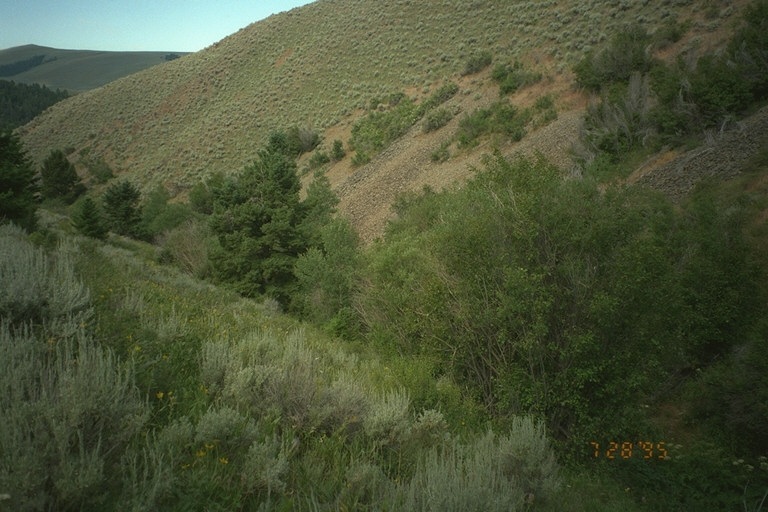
Riparian area Public Lands Salmon Field Office UCSC Upper Columbia Salmon Clearwater District